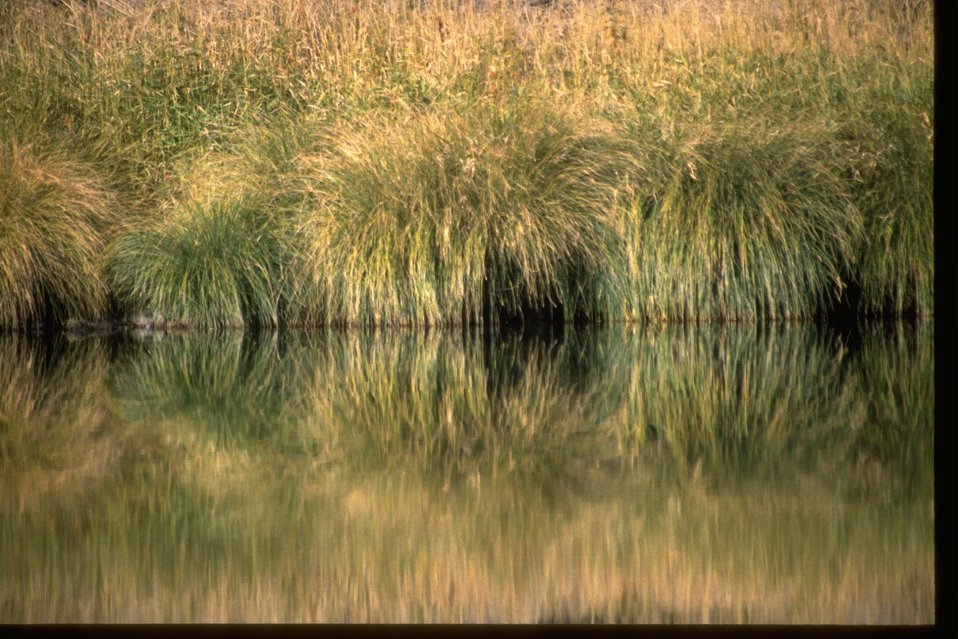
Riparian vegetation along the bank of the John Day River, near Bridge Creek.